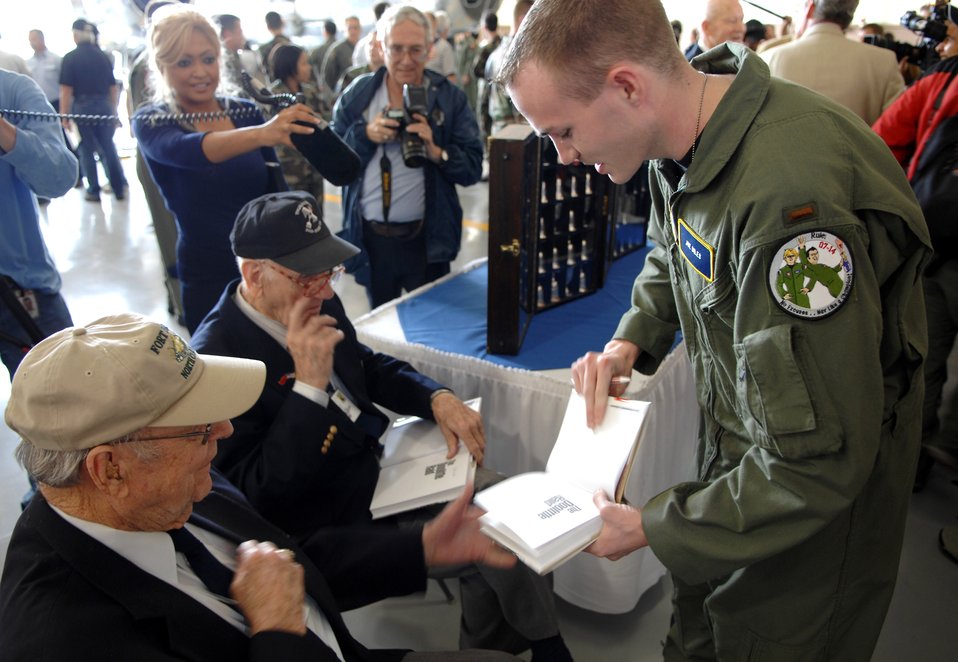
Doolittle Raiders 65th anniversary kicks off

Second Lt. Joe Biles gets his books signed by Doolittle Raiders Robert Hite and Tom Griffin after a ceremony honoring the raiders and celebrating the 65th Anniversary of the raid April 17 at Randolph Air Force Base, Texas. Lieutenant Biles is with the 562nd Flying training squadron at Randolph AFB. The Doolittle Raiders flew B-25 Mitchell bombers over Japan April 18, 1942, just four months after Pearl Harbor.